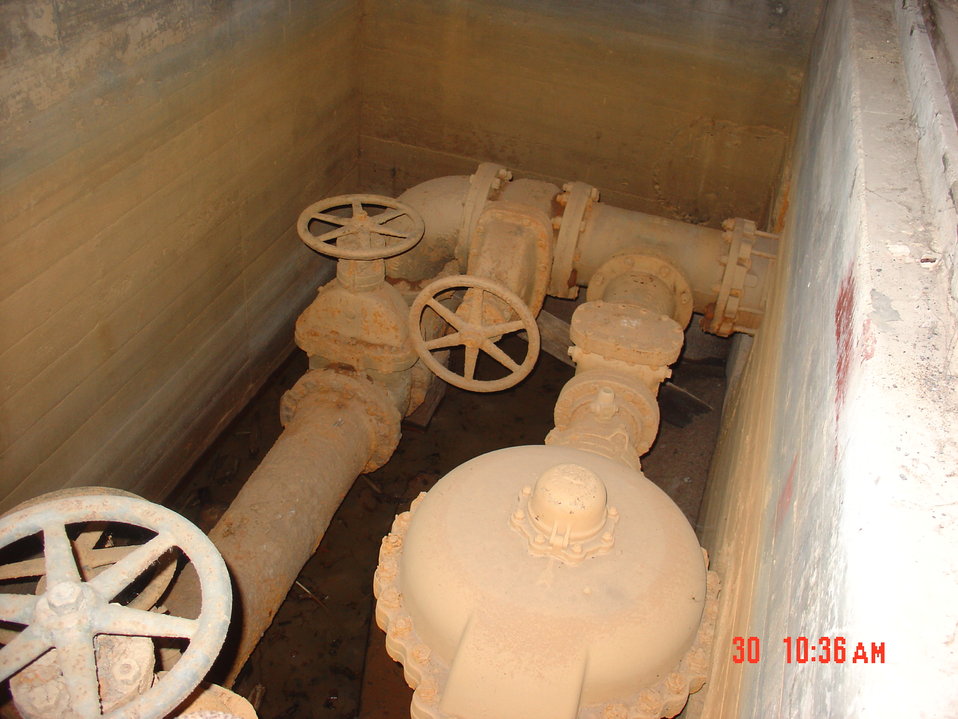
NFSS BUILDING 401 PIPES

Activities from the Niagara Falls Storage Site, which is associated with the former Lake Ontario Ordnance Works. Formerly Utilized Sites Remedial Action Program (FUSRAP), a program initiated in 1974 to identify, investigate and clean up or control sites that were part of the Nation's early atomic energy and weapons program. Activities at the sites that are eligible for FUSRAP were conducted by Manhattan Engineer District (MED) or the Atomic Energy Commission (AEC), both predecessors of the Department of Energy (DOE). The U.S. Army Corps of Engineers was assigned management of FUSRAP by Congress in 1997.